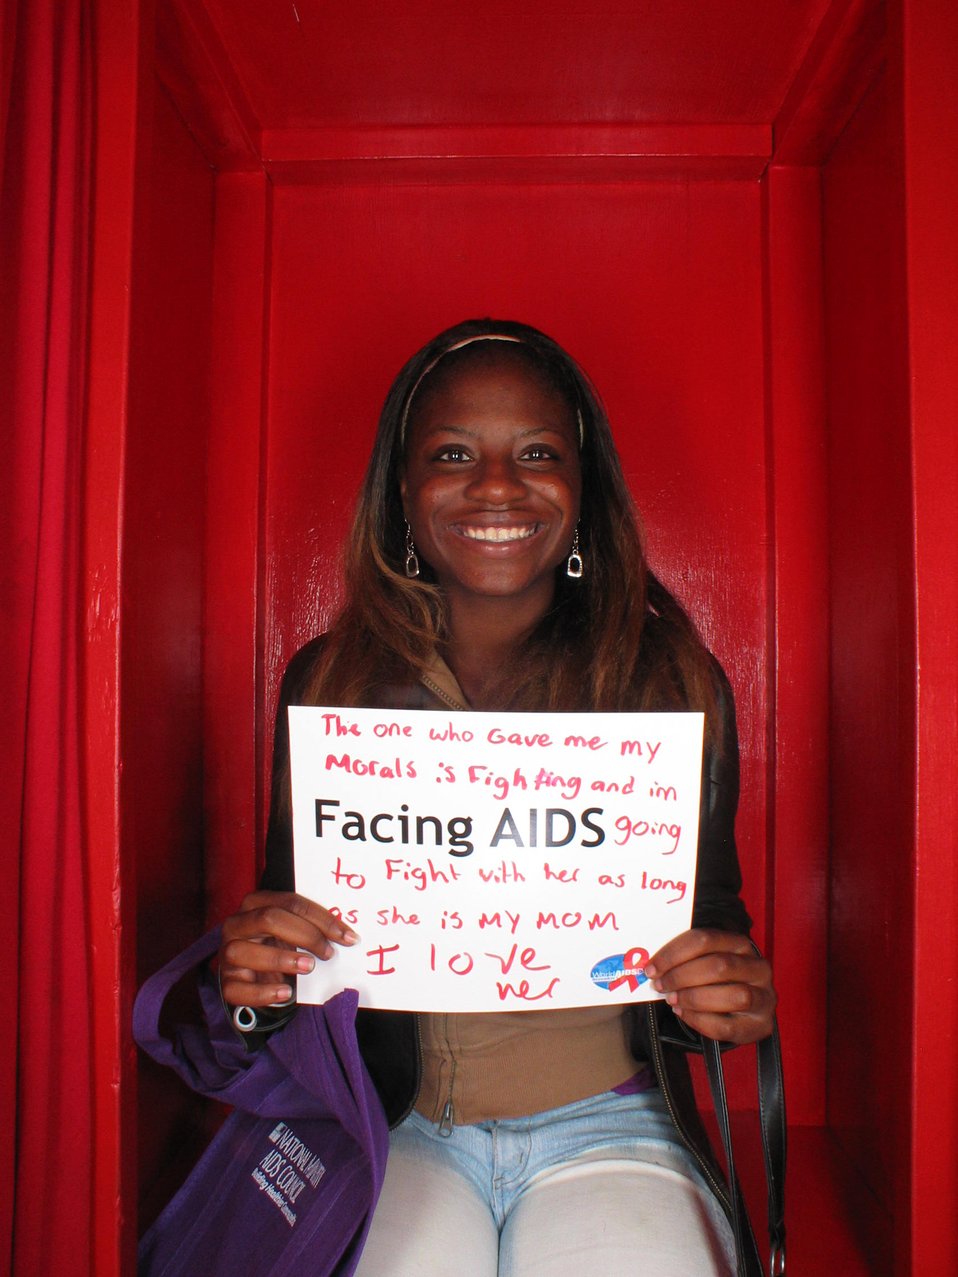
The one who gave me my moral is fighting. Facing AIDS. She is my mom and I love her.